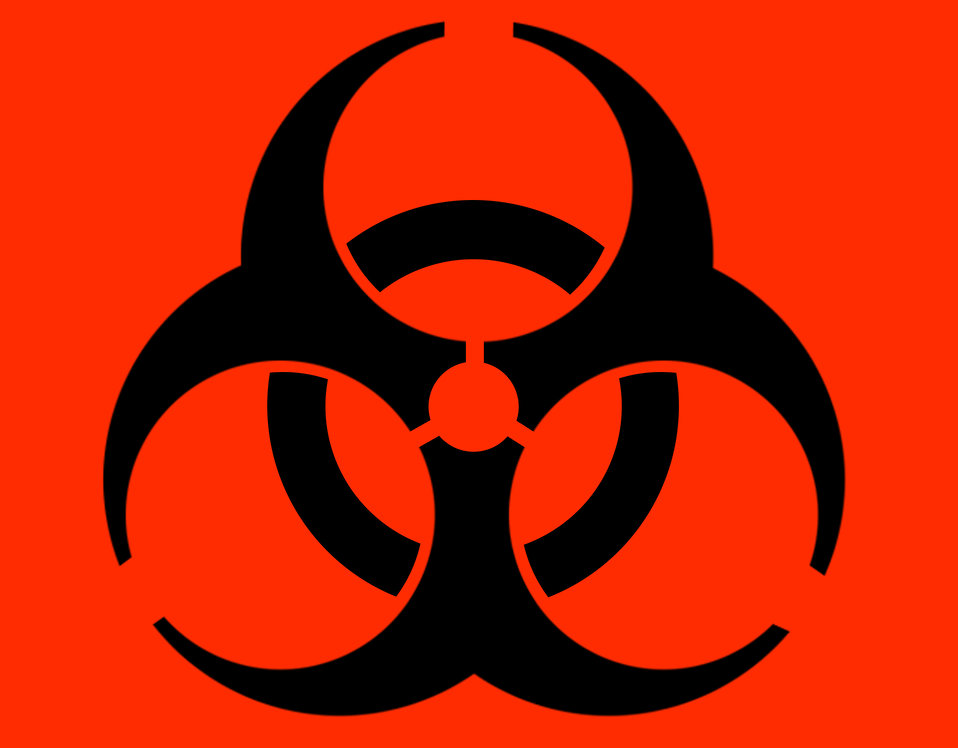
Biological hazard logo.